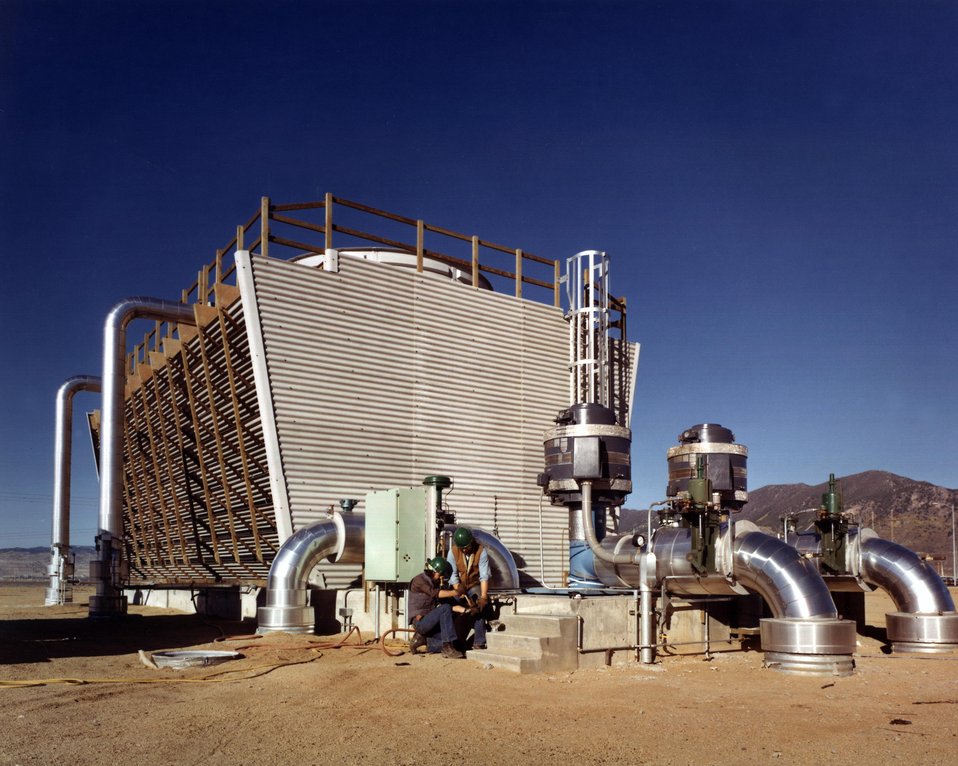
SECONDARY COOLING SYSTEM SUPPLIES COOLING WATER FOR ALL FACILITY EQUIPMENT NOT SUPPLIED FROM PRIMARY COOLING SYSTEM.

HEAT REMOVED FROM THE EQUIPMENT IS RELEASED TO THE ATMOSPHERE VIA 100% CAPACITY EVAPORATOR COUNTER FLOW COOLING TOWER CONSISTING OF TWO CELLS.